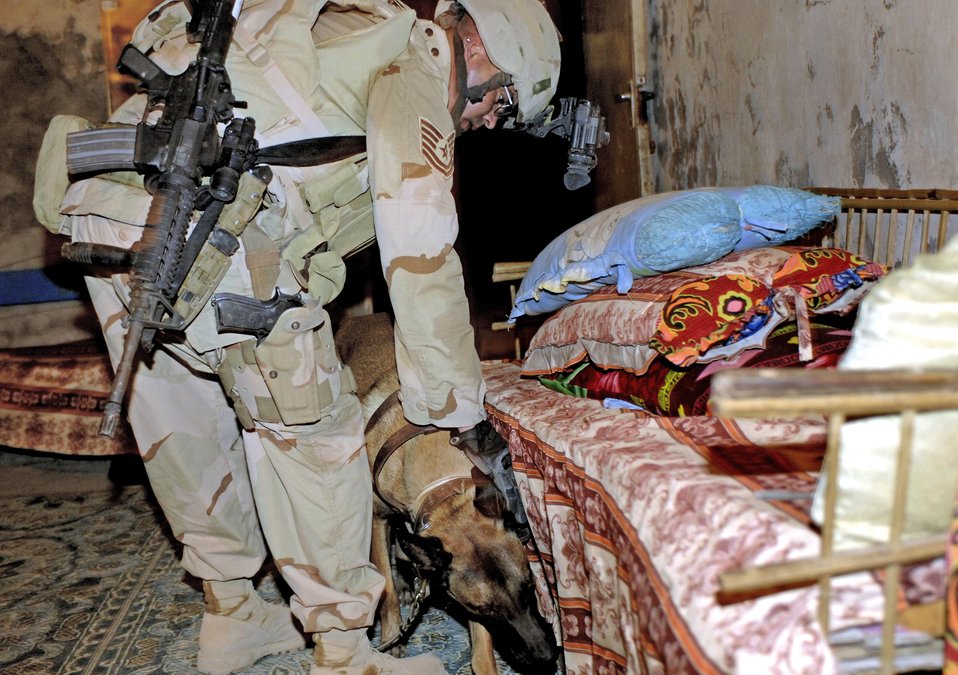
Team search

An Airman conducts a search with his military working dog at the home of a suspected insurgent in a village outside Baqubah, Iraq, Oct. 3.